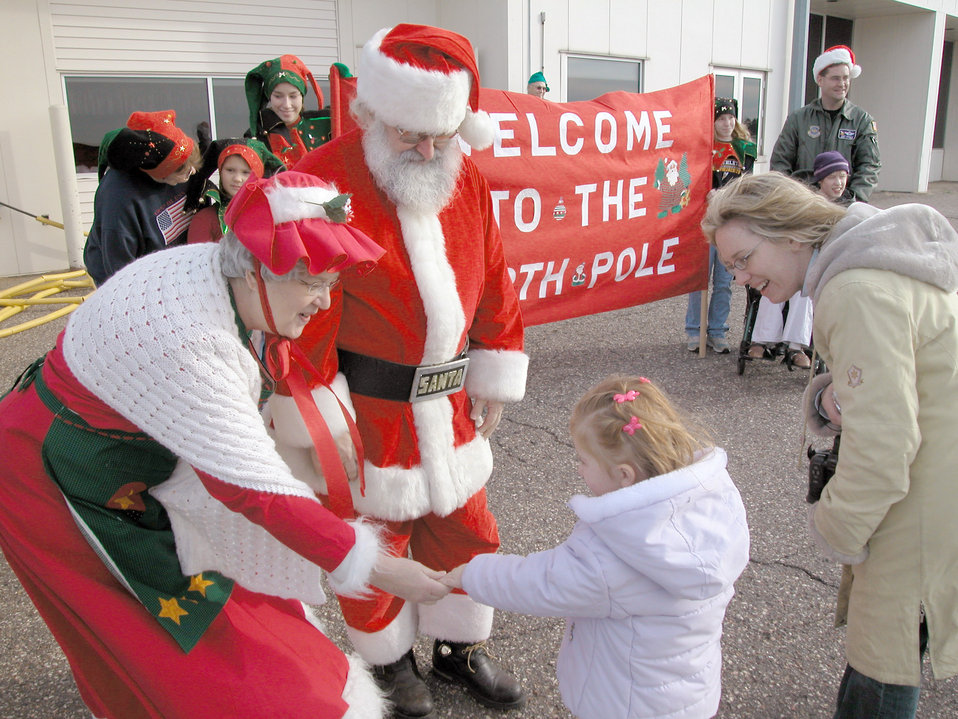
Welcome to the North Pole

EAU CLAIRE, Wis. -- Santa Claus, Mrs. Claus and the elves greet a group of children with special needs or serious illness and their families as they arrive at the